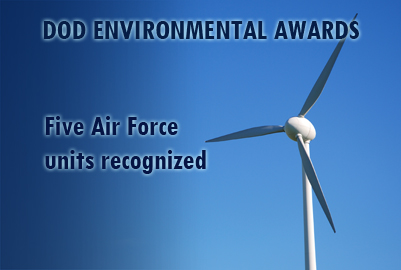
DOD Environmental awards